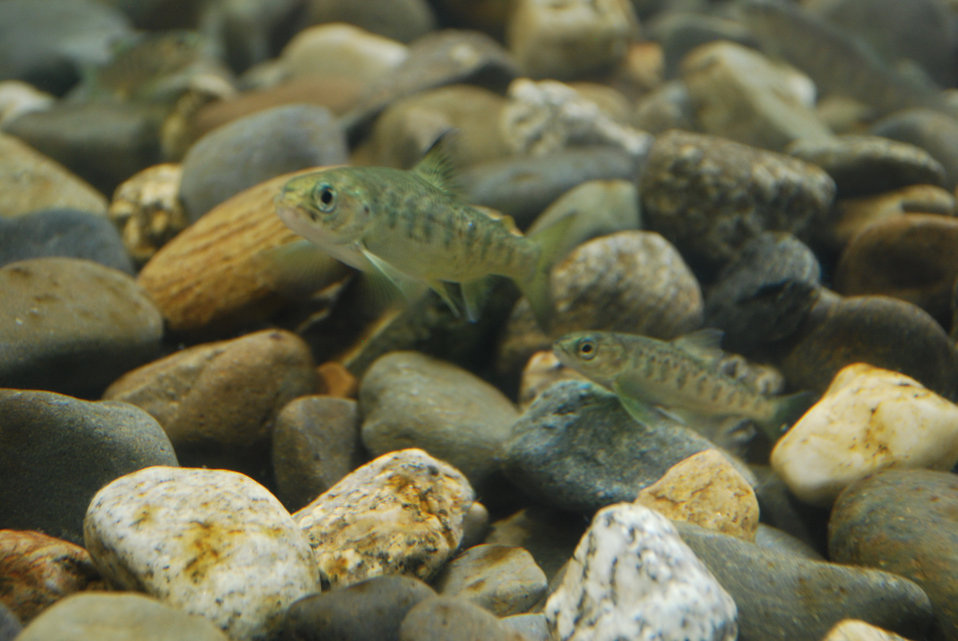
Atlantic Salmon Parr in Cobble Habitat

Atlantic salmon parr in the Machias River, Maine, (about 8 cm. long) have protective camouflage during their parr stage which virtually hides the immature fish in their cobble habitat.